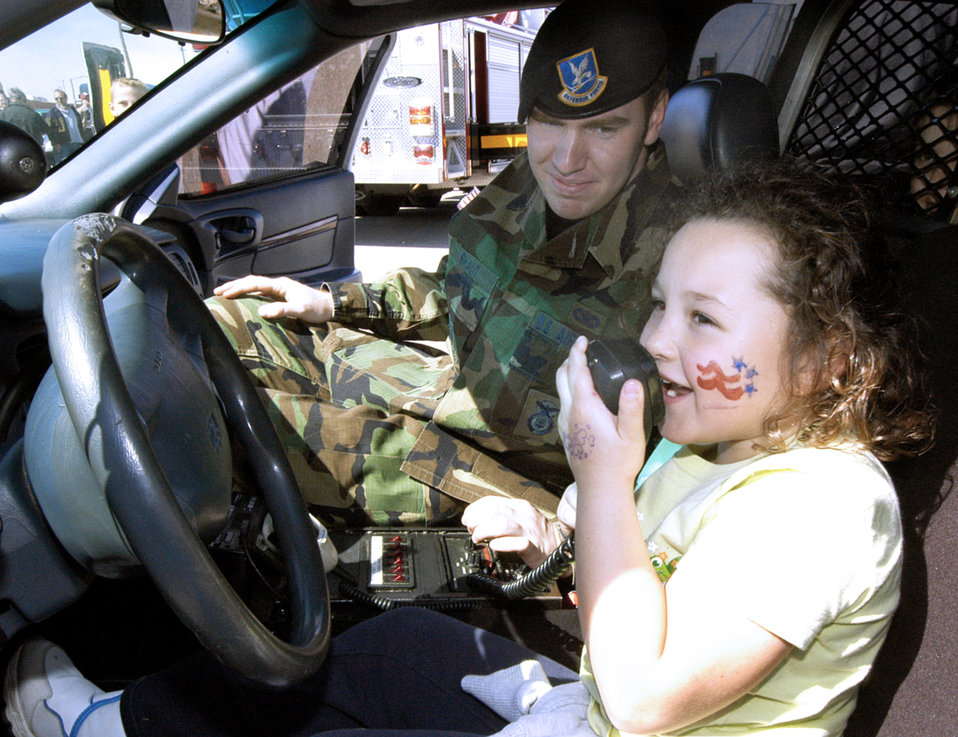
Through the eyes of a child

TINKER AIR FORCE BASE, Okla. -- Teagan Hamilton, 6, demands for her dad, aircraft painter Steve Hamilton to